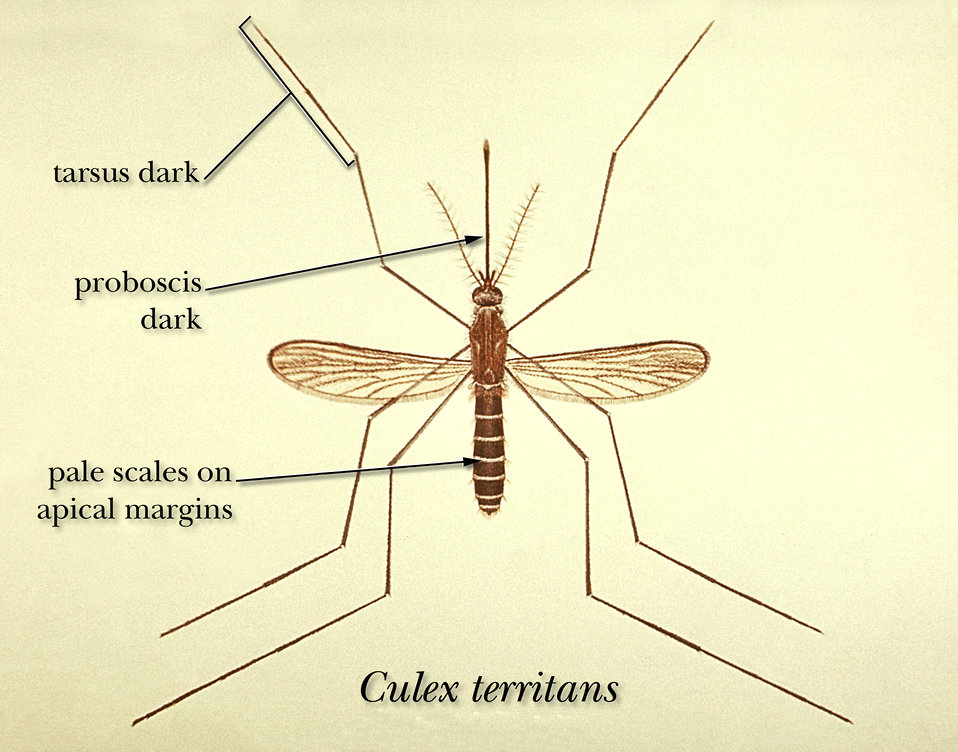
An illustration depicting morphologic characteristics common to Culex territans.